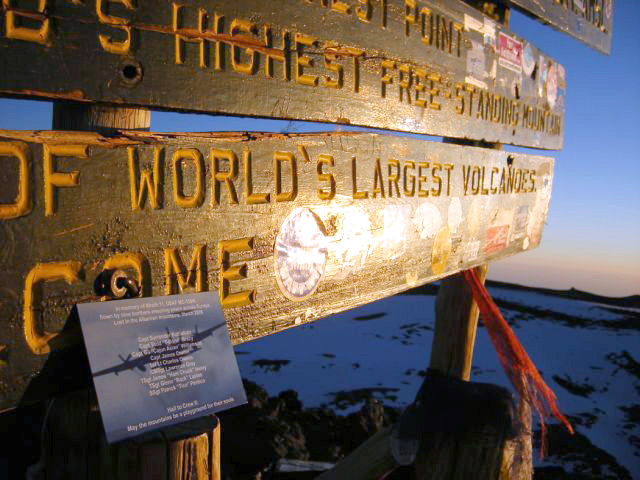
Team conquers mountain summit on quest

The Seven Summits Challenge team left a plaque on the summit of Mount Kilimanjaro dedicated to the memory of the crew of Wrath 11, Special Operations Airmen who lost their lives in an aircraft accident in Albania in March 2005. The summit is the highest point in the Special Operations Command European area of responsibilty. The plaque reads,